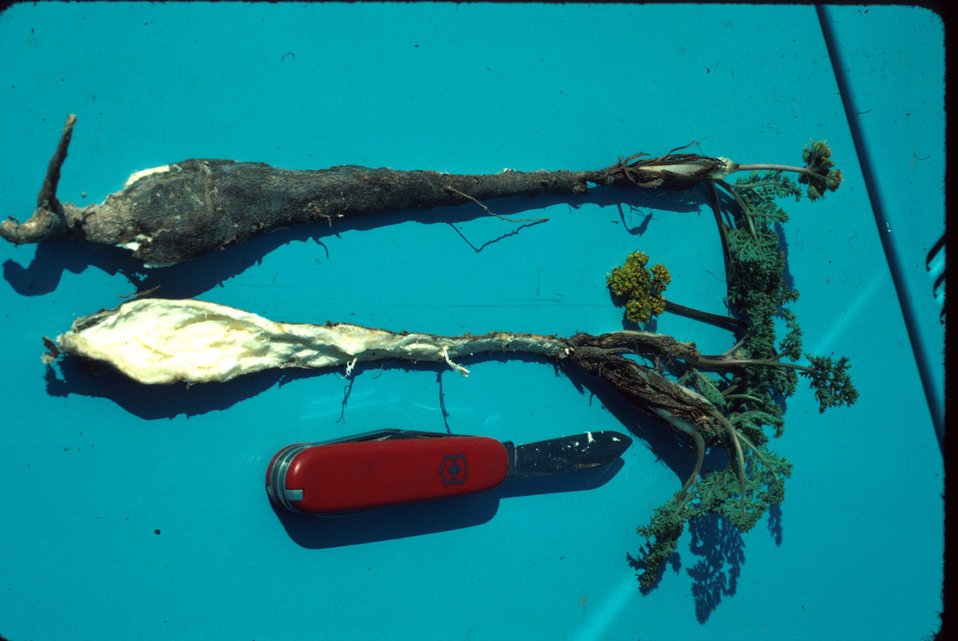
Lomatium canby biscuit root Wildflower